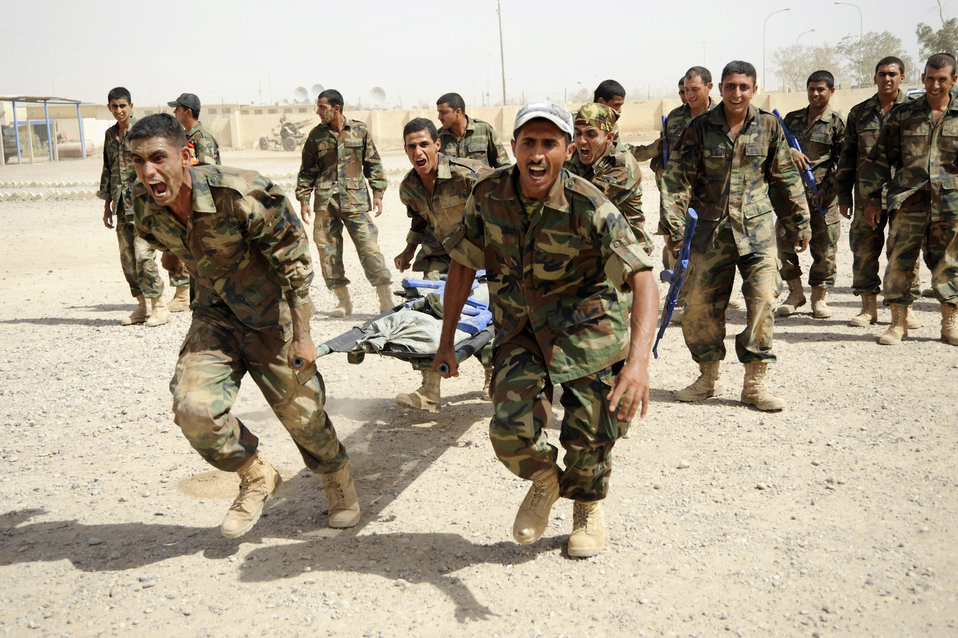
Training instructors build tactical course for Iraqi airmen

Iraqi air force warrant officers carry a litter weighted down with blue training rifles and sand bags during their run of the tactical course at Al Taji Air Base, Iraq, Sept. 27. The tactical course tests their ability to work as a team and negotiate a variety of obstacles.